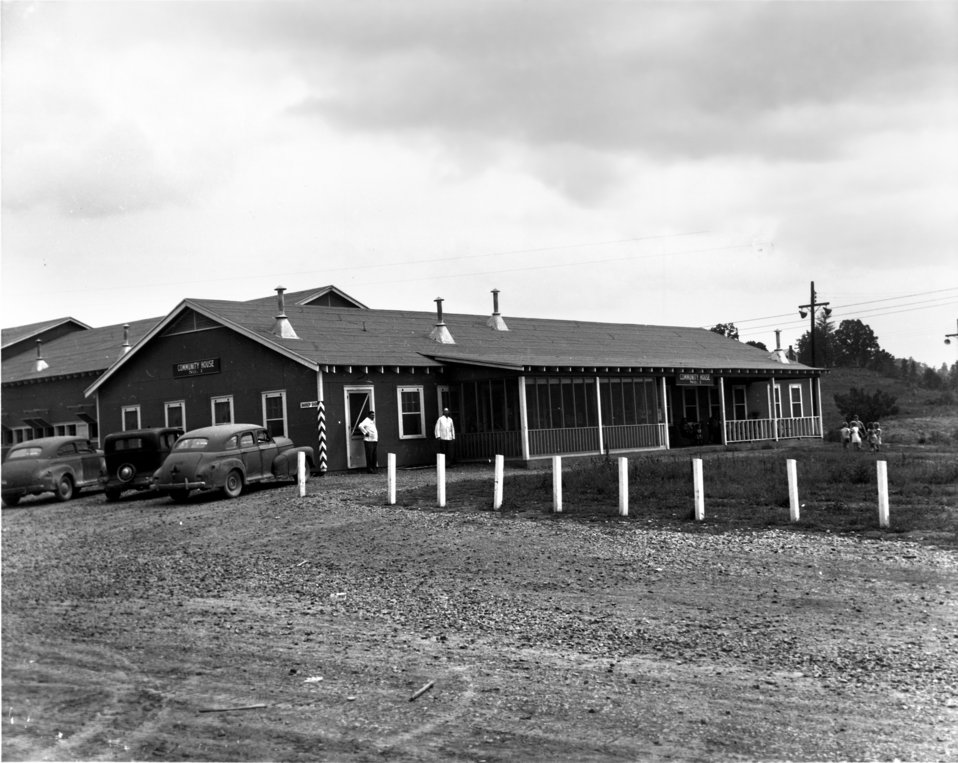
Reck, Hall K-25 area Oak Ridge

15-1 DOE photo by Ed Westcott Oak Ridge Tennessee 9/7/44